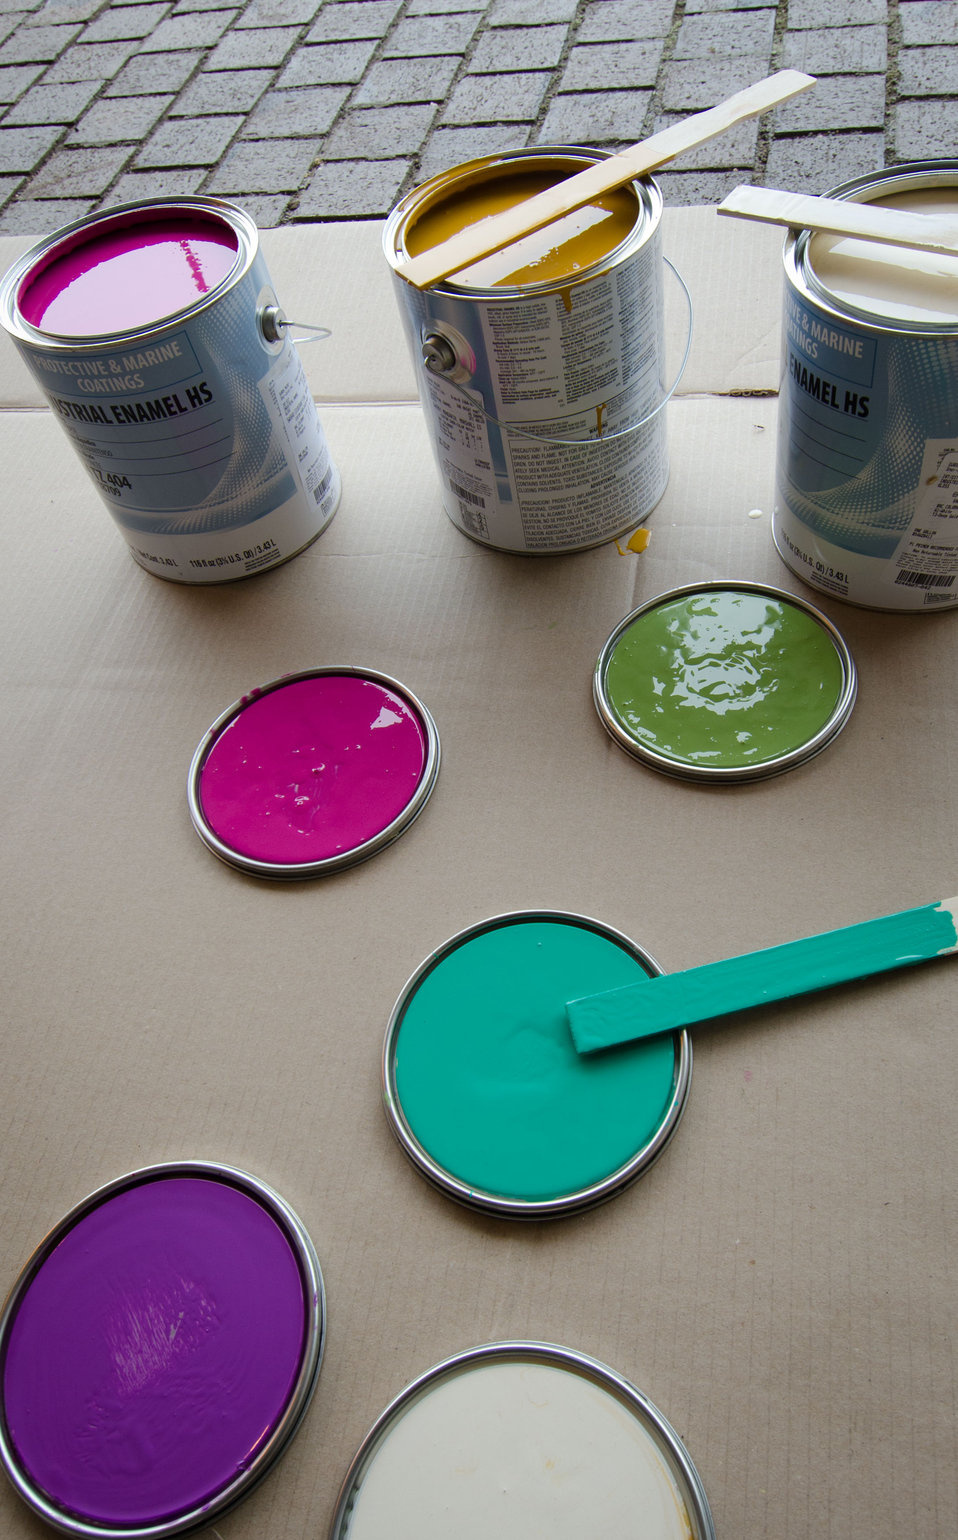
The paint is eady for the raised planter boxes that U.S. Department of Agriculture (USDA) People’s Garden Executive Master Gardeners, friends, and family, along with Washington Capitals fans will use as volunteer painters for the District of Columbia Public Schools’ (DCPS) Beautification Day, on Saturday, August 25, 2012, at Thurgood Marshall Elementary School, in Washington, D.C. Each year people are invited to help “spruce up” public school facilities in preparation for the first day of school. More than 70 volunteers pitched in at this large school facility. The People’s Garden effort involves building and painting raised planter boxes, then preparing the soil mixture so they are “ready to grow.” Additionally, a team that includes descendants of U.S. Supreme Court Justice Thurgood Marshall assembles a prefabricated garden toolshed. The Justice’s son, John Marshall leads the team, which includes Brianna the Justice’s great-grand daughter in one of many multi-generational efforts at this school today. Washington Capitals Forward Mike Riberio, his family and mascot Slapshot participated in every project underway at Marshall School. From the outside gardens, to inside murals, and robotics worktable construction, the teams made their goals.